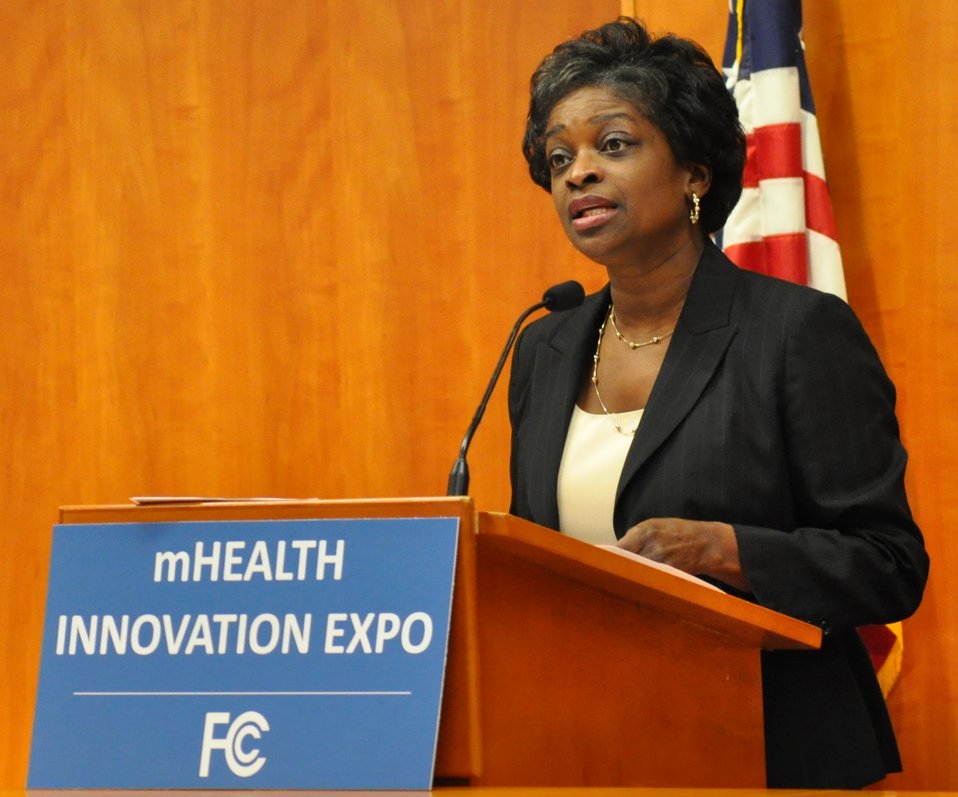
12.6.13 mHealth Innovation Expo

Welcome Remarks from Mignon Clyburn, Commissioner, FCC